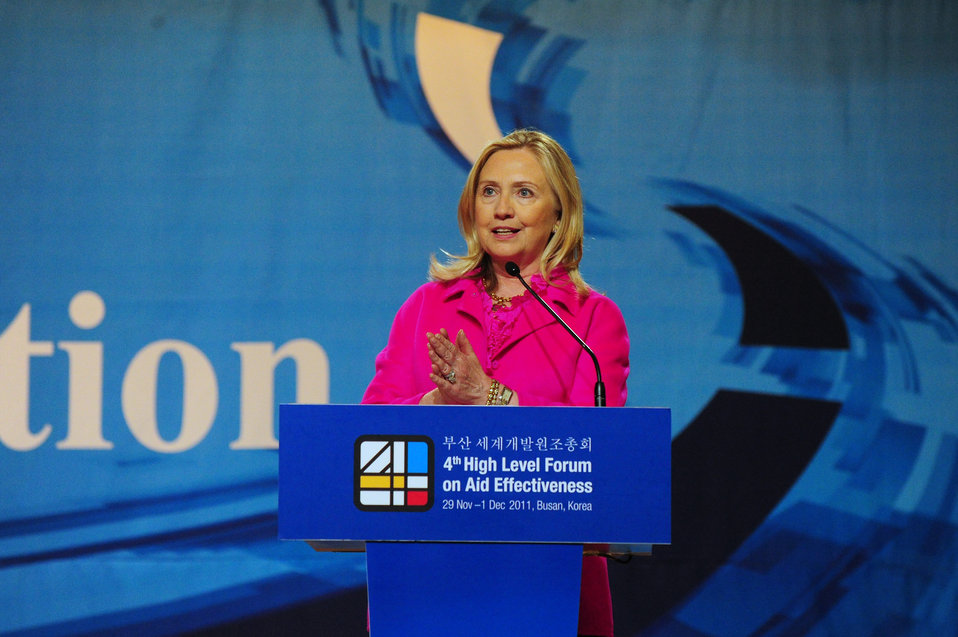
Secretary Clinton Delivers Remarks on Gender

U.S. Secretary of State Hillary Rodham Clinton delivers remarks at the Special Session on Gender at the Fourth High-Level Forum on Aid Effectiveness (HLF4) in Busan, South Korea, on November 30, 2011.